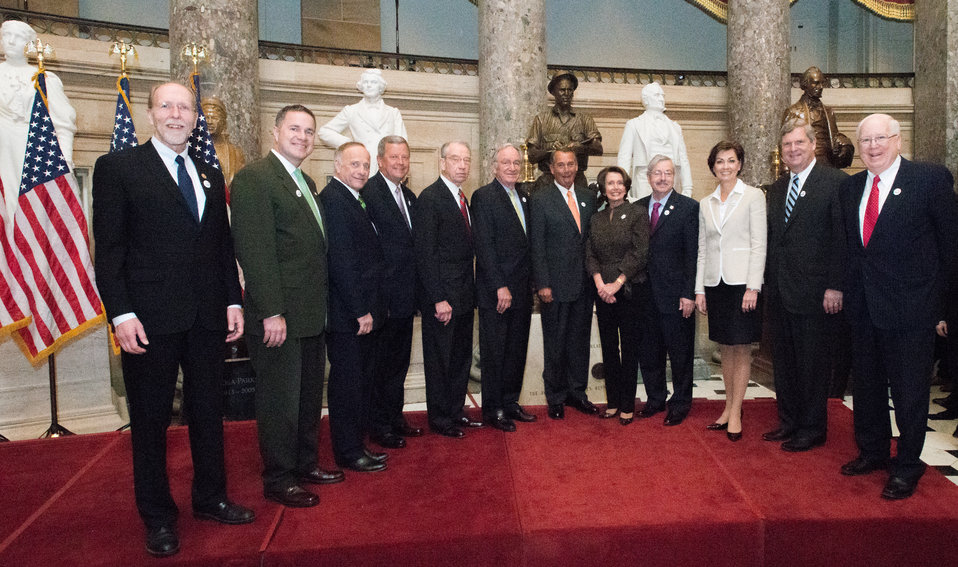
The 7-foot bronze statue of Dr. Norman E. Borlaug was unveiled in the National Statuary Hall at the U. S. Capitol in Washington, D.C. on Tuesday, Mar. 25, 2014. The unveiling was performed by Minority Leader of the House of Representatives Nancy Pelosi, Mr. Bill Borlaug (son of Dr. Borlaug), Agriculture Secretary Tom Vilsack, Speaker of the House of Representatives John Boehner, Iowa Governor Terry Branstad and Majority Leader of the U.S. Senate Harry Reid. Today commemorates 100 years since Dr. Borlaug’s birth. Through his scientific and humanitarian achievements, Nobel Laureate Dr. Norman E. Borlaug (1914-2009) has been credited with saving millions of people from starvation in developing countries. His collaborative work with scientists in Mexico on a high-yielding, disease resistant dwarf wheat sparked the Green Revolution of the 1960s. The National Statuary Hall Collection in the U.S. Capitol is composed of statues donated by individual states to honor persons notable in their history.